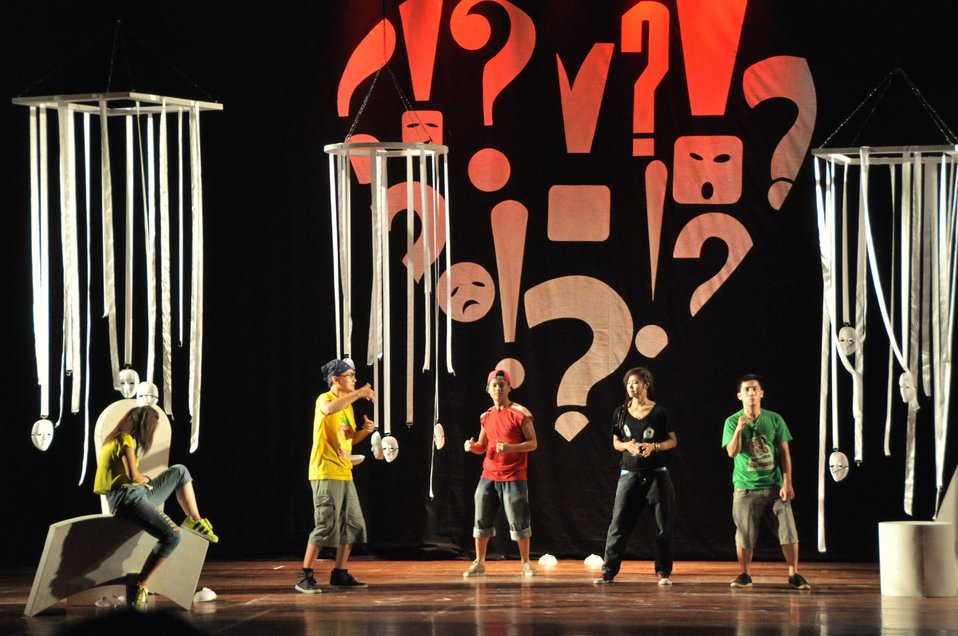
PEPFAR Musical Questions and Exclamations

Hanoi, May 17, 2013